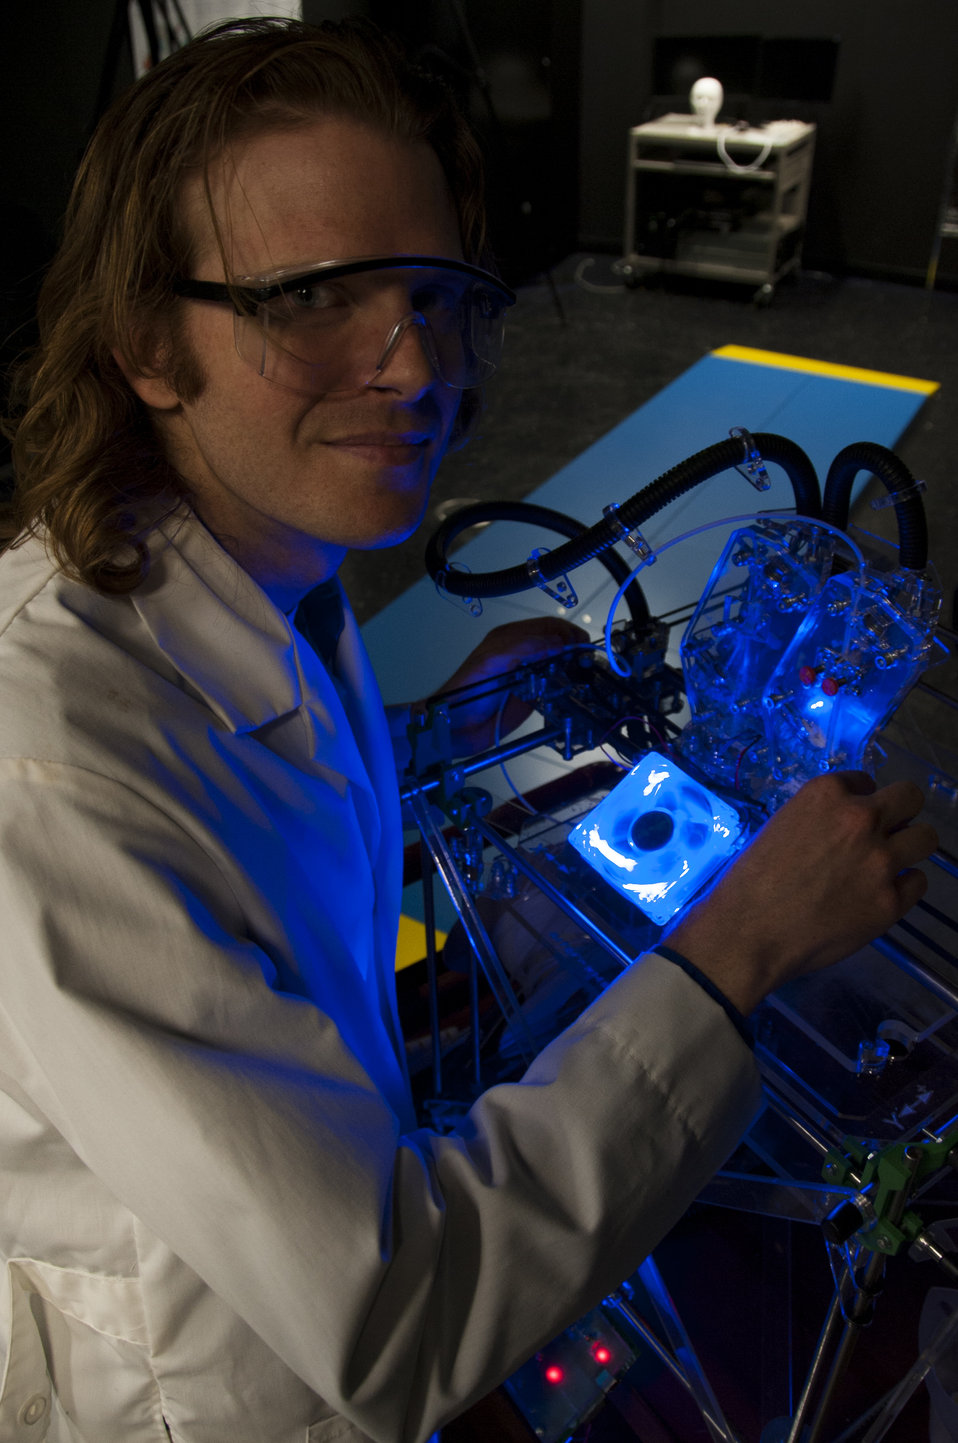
3-D Printing at FDA (8267)

Research engineer James Coburn uses this 3-D printer in his work at FDA. 3-D printing—the process of making a three-dimensional solid object of virtually any shape from a digital model—is spurring innovation in manufacturing, dramatically reducing the time required to design new products and allowing designs to be built that were not possible before. At FDA, we’re using it to expand both our research and our review of new and innovative medical products. To learn more, read this FDA Voice blog post:

• FDA Goes 3-D